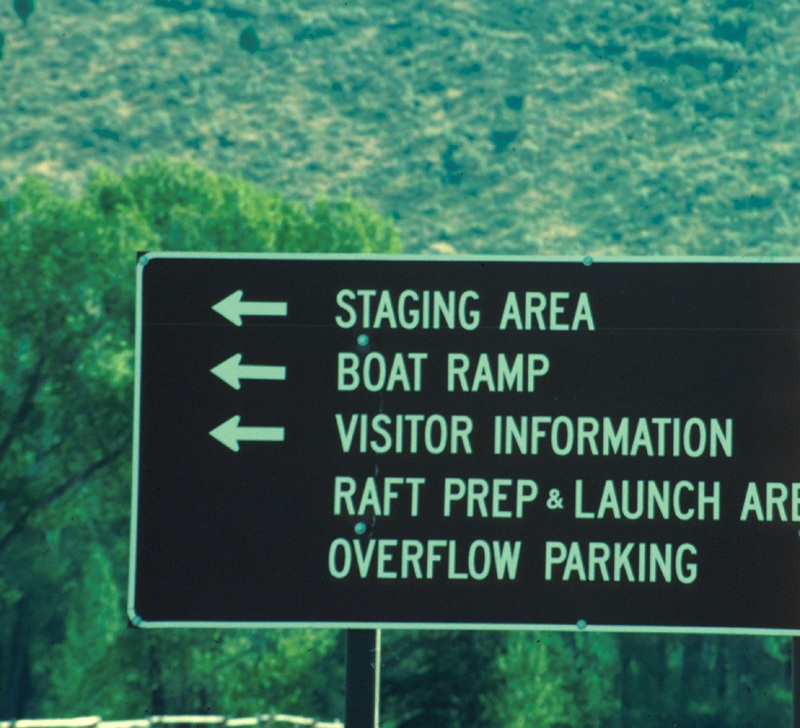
South Fork of the Snake River